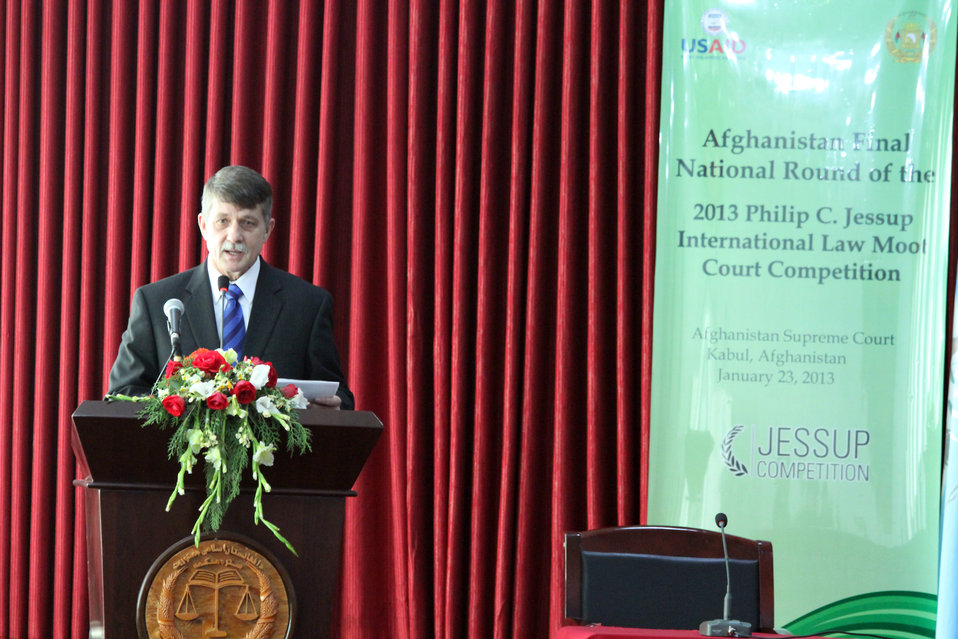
Afghanistan Final National Round of the 2013 Philip C.Jessup International Law Moot Court Competition